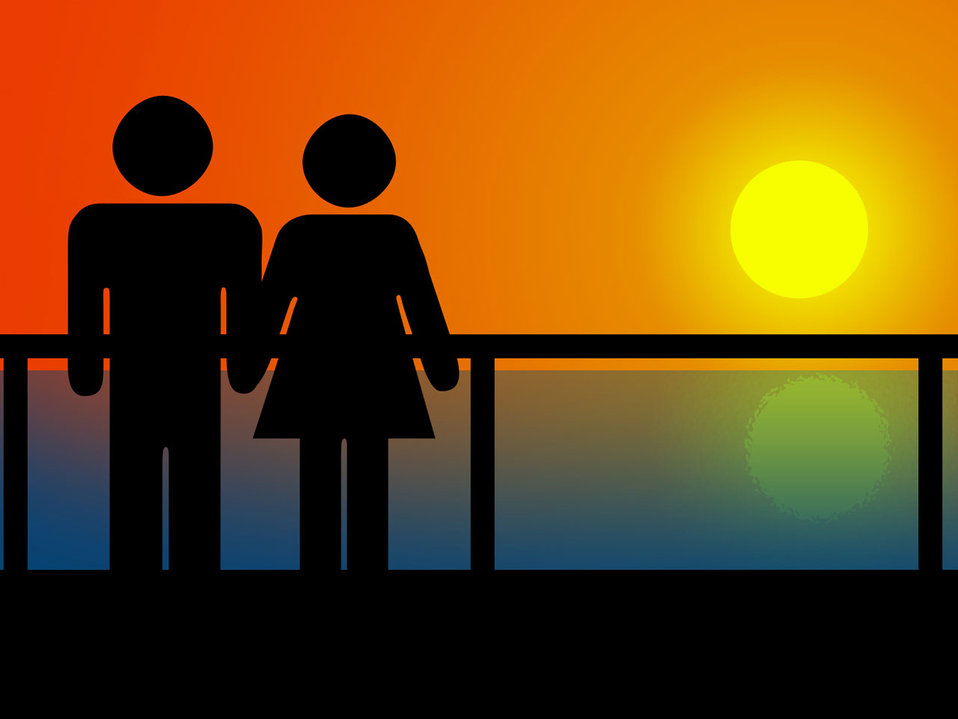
Romantic sunset by the sea.